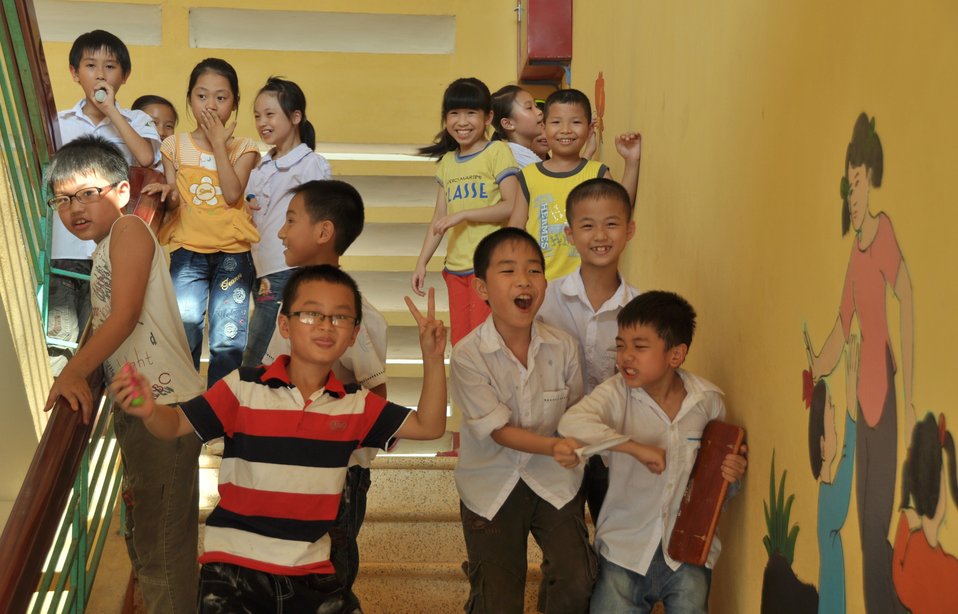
USAID supports deworming education and medication distribution in Bac Giang Province

May 20, 2013